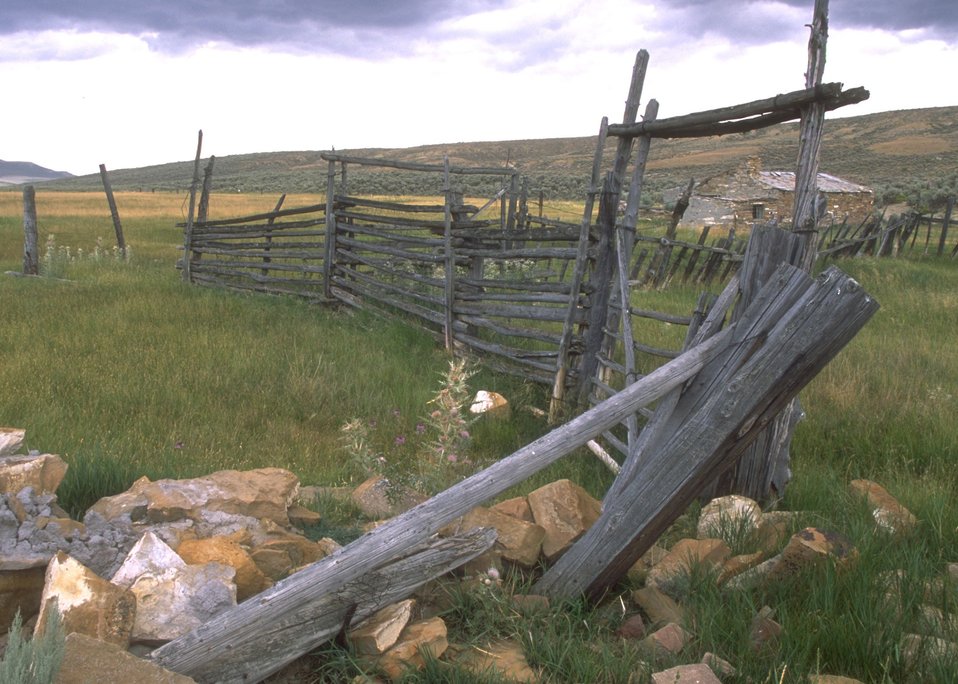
Historic Crookston Ranch near OHV Sand Dunes Area, Rock Springs Field Office.